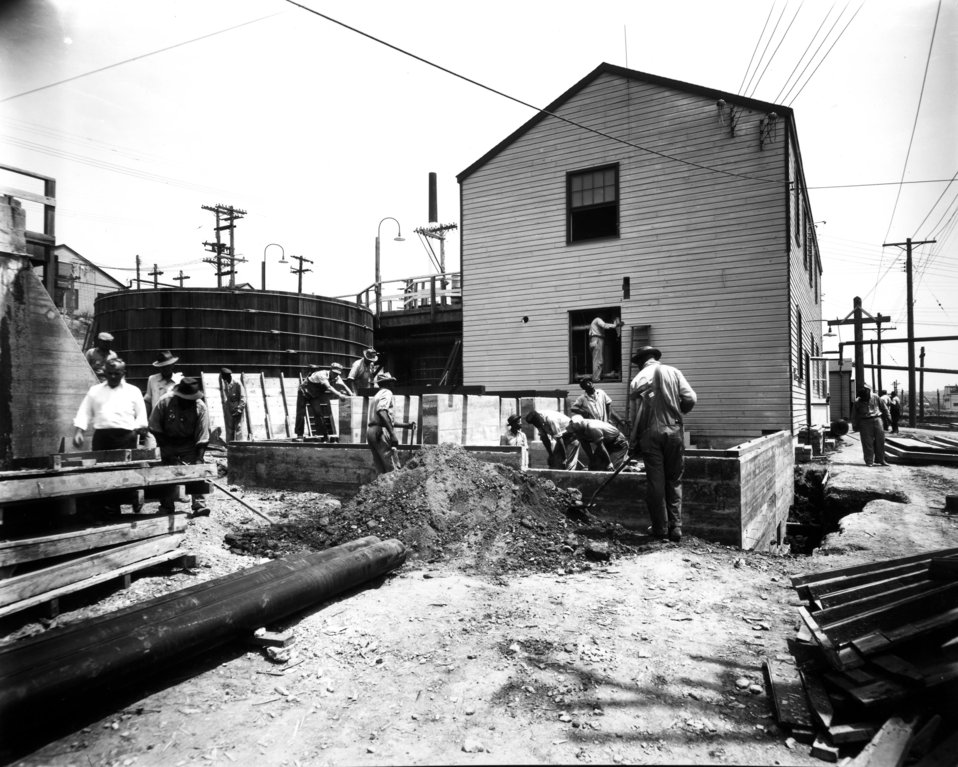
X-10 at Oak Ridge